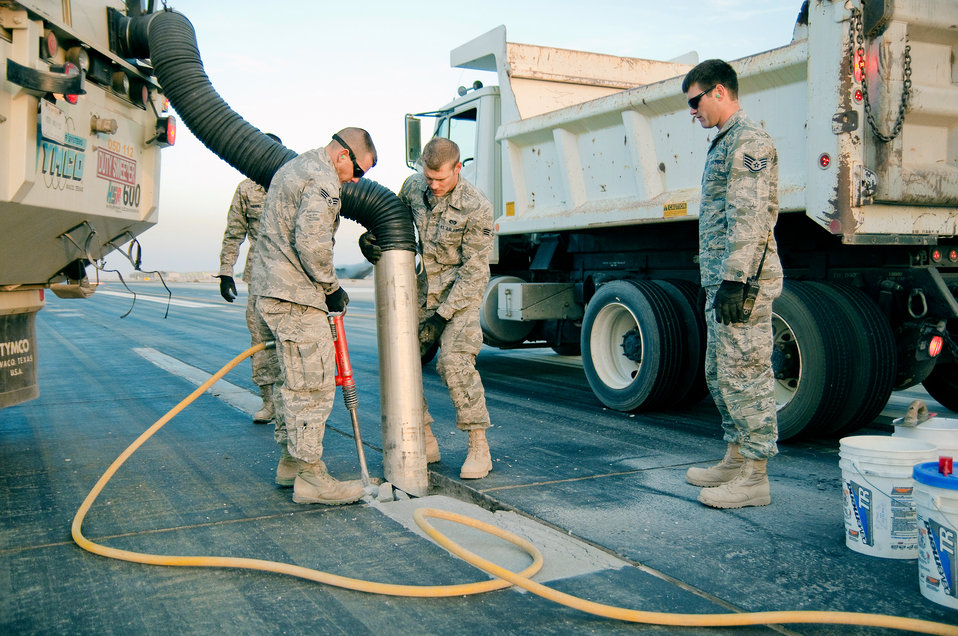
Runway repair team keeps airlift moving at 386th AEW

Members of the 386th Expeditionary Civil Engineer Squadron's runway repair team excavate cracked pavement and remove debris with a sweeper truck Dec. 10, 2010, on a runway at an air base in Southwest Asia. The team makes weekly repairs to the runways here.